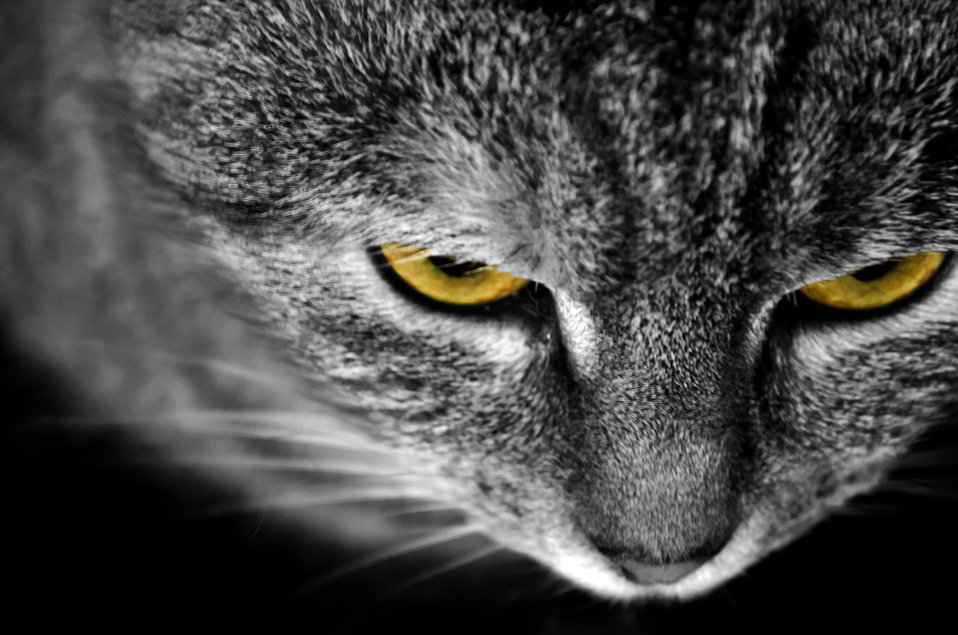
Cat on black background.